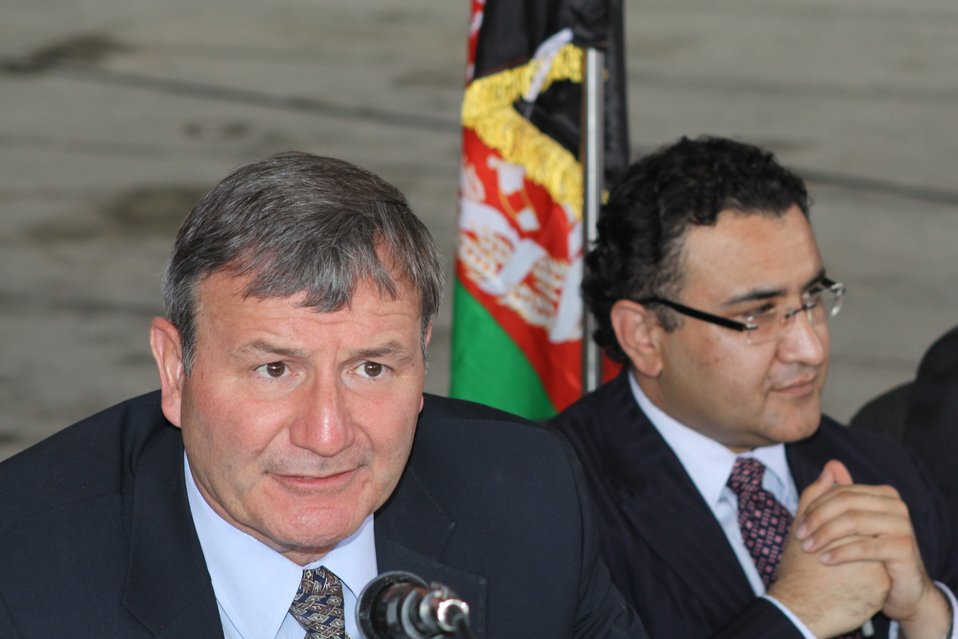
100525 Hirat Marble Conference 318